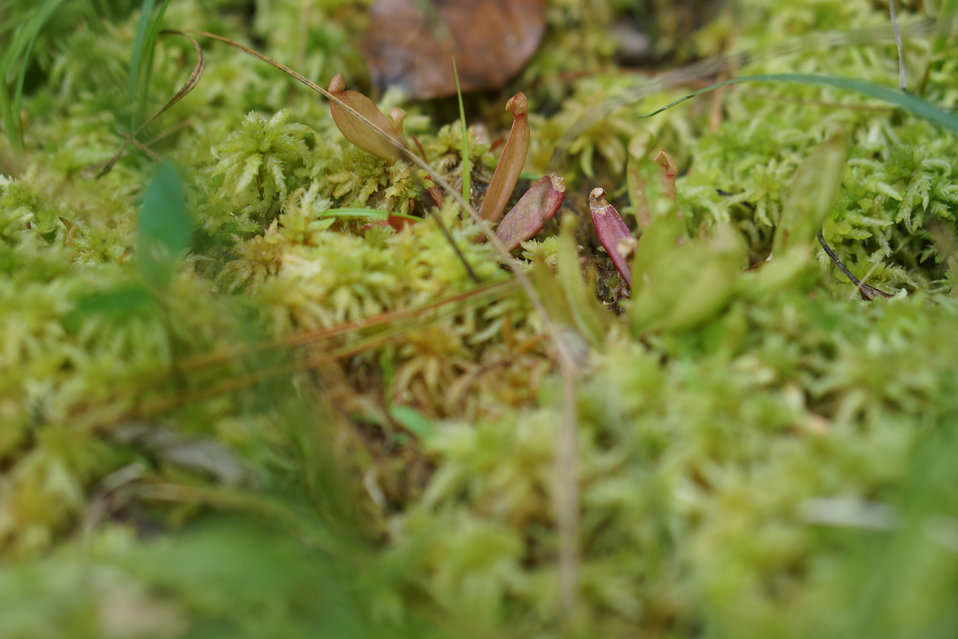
Young mountain purple pitcher plants

In May, bog conservationists from Tennessee, North Carolina, and Georgia convened in the north Georgia mountains for the spring, 2014 meeting of the Bog Learning Network. The event provided an opportunity for biologists to see, first hand, the result of management efforts at two north Georgia bogs. More importantly, the outings provided an opportunity to share innovative approaches to bog management, such as the role of the Georgia Plant Conservation Alliance in conserving rare plants and coordinating a cadre of volunteers to work on bog management.

The Bog Learning Network was convened in the winter of 2013 as a way to bring together people working for bog conservation across the Southern Appalachians. Southern Appalachian bogs are one of North America’s rarest habitats and home to many rare plants and animals.